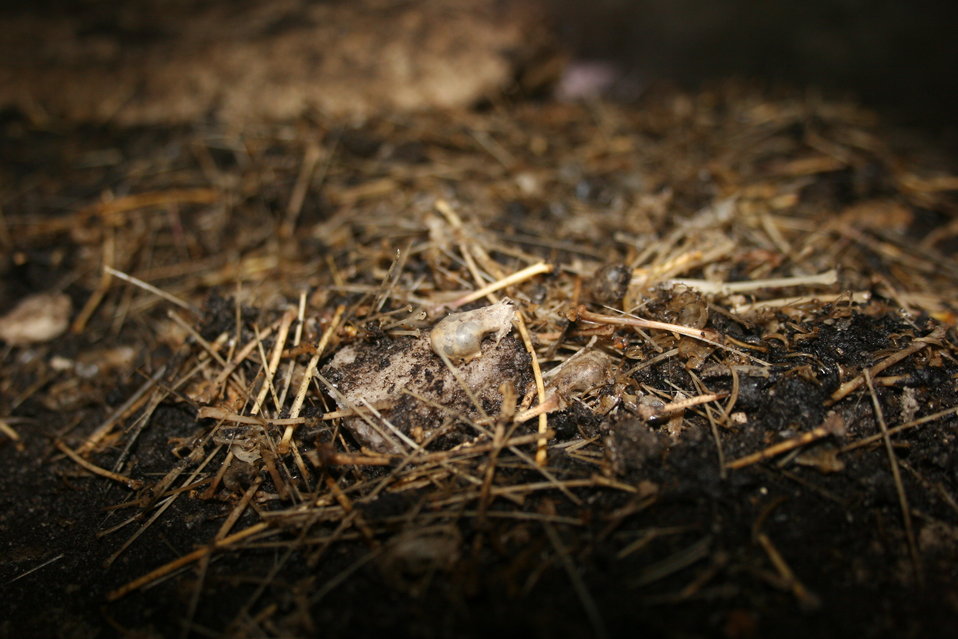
Bat skull and bones in Mt. Aeolus Cave